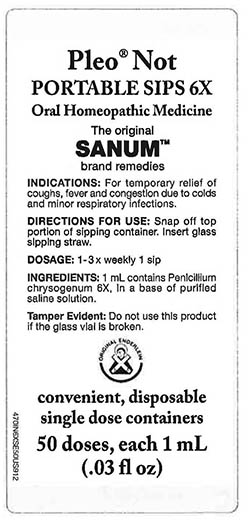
RECALLED – Homeopathic Drug Products

March 18, 2014 – Product Recall – Terra-Medica Issues Voluntary Nationwide Recall of Specified Lots of Pleo Homeopathic Drug Products Due to the Potential for Undeclared Penicillin.